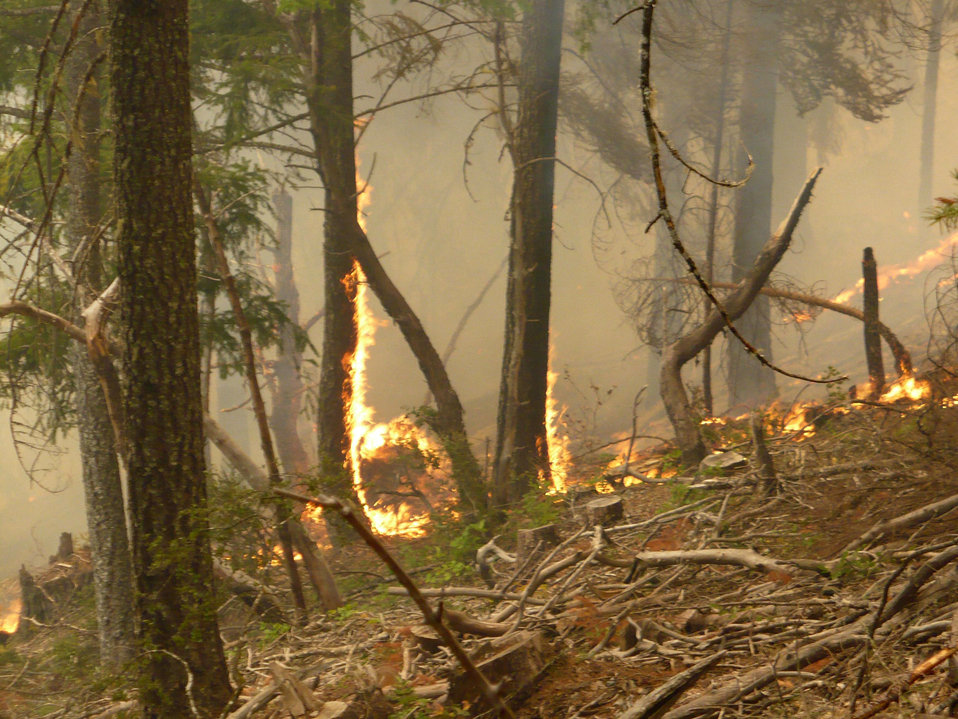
The Brimstone Fire near Merton, OR began on Jul. 26, 2013 began by lightning consumed 2,372 acres and is 100% contained.